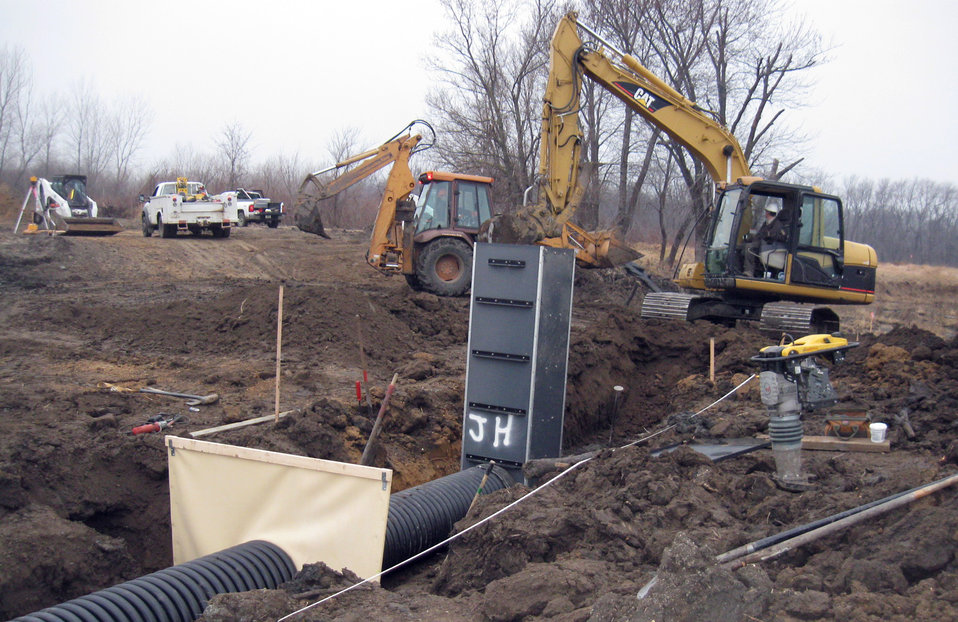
Placing the 18-inch Pipe

This dark vertical structure holds stoplogs that can also help adjust water levels.